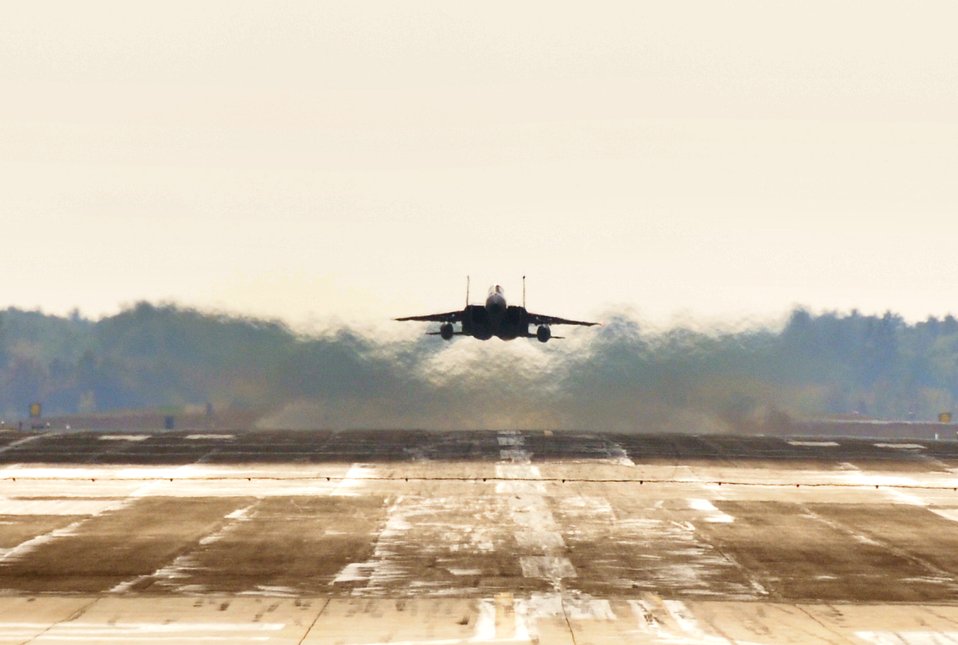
Training with the eagles

An F-15 Eagle takes off from Barnes Air National Guard Base, Mass., while participating in a training mission Oct. 21, 2010. The Massachusetts Air National Guard's 104th Fighter Wing is responsible for alert support for the northeastern United States.